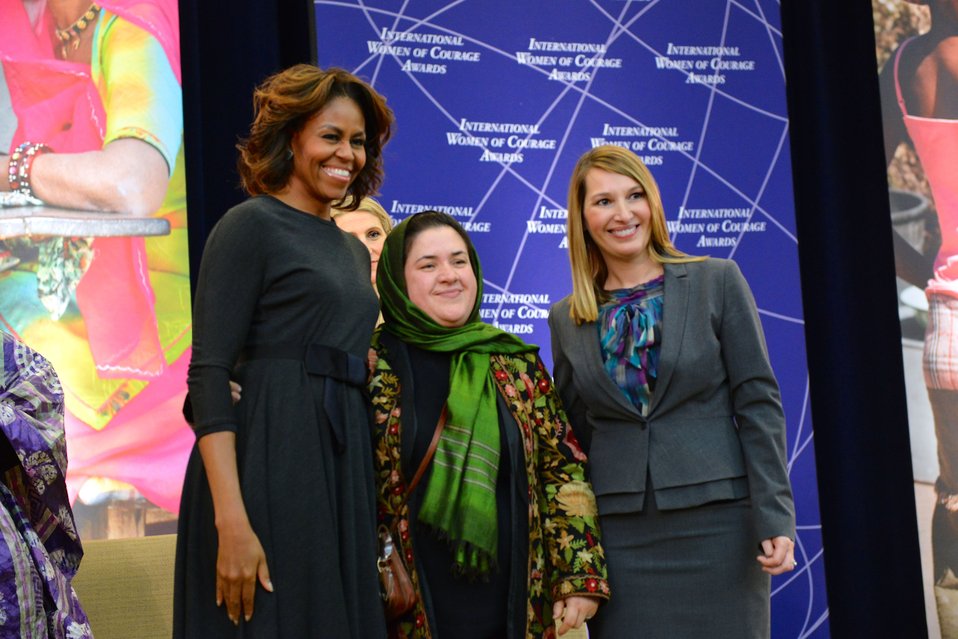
First Lady Michelle Obama and Deputy Secretary Higginbottom With 2014 IWOC Awardee Dr. Nasrin Oryakhil of Afghanistan

First Lady Michelle Obama and Deputy Secretary Higginbottom pose for a photo with 2014 International Women of Courage Awardee Dr. Nasrin Oryakhil, Director of Malalai Maternity Hospital in Kabul, Afghanistan, delivers remarks at the 2014 Secretary of State’s International Women of Courage Award Ceremony at the U.S. Department of State in Washington, D.C., on March 4, 2014.